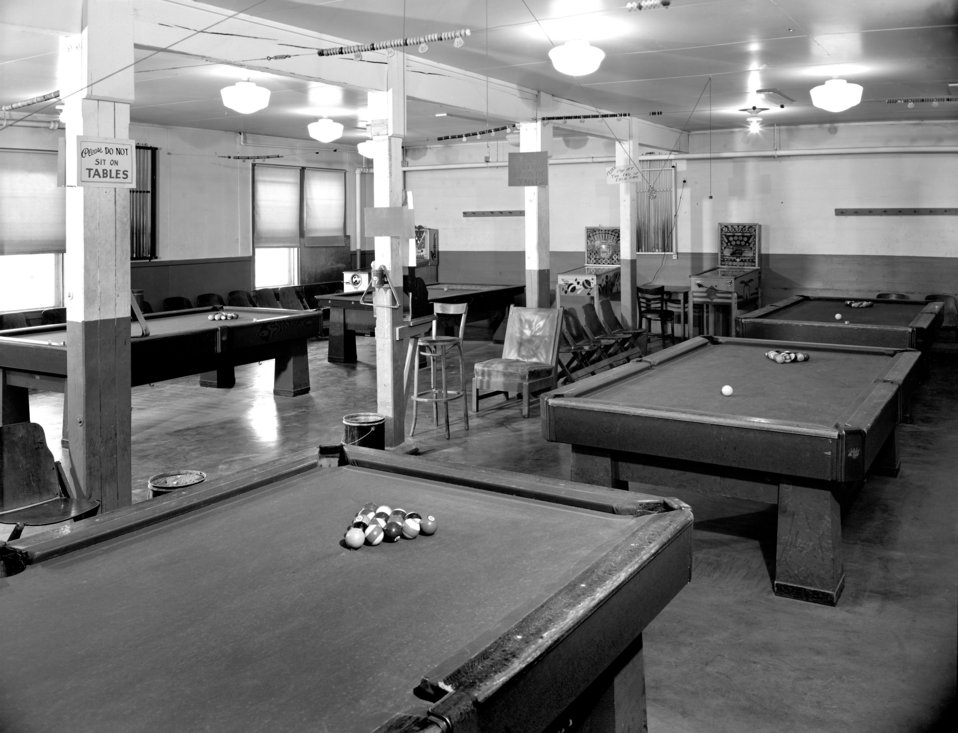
Grove Hall Interior Oak Ridge 1948

4546-12 DOE photo Ed Westcott Oak Ridge Tennessee